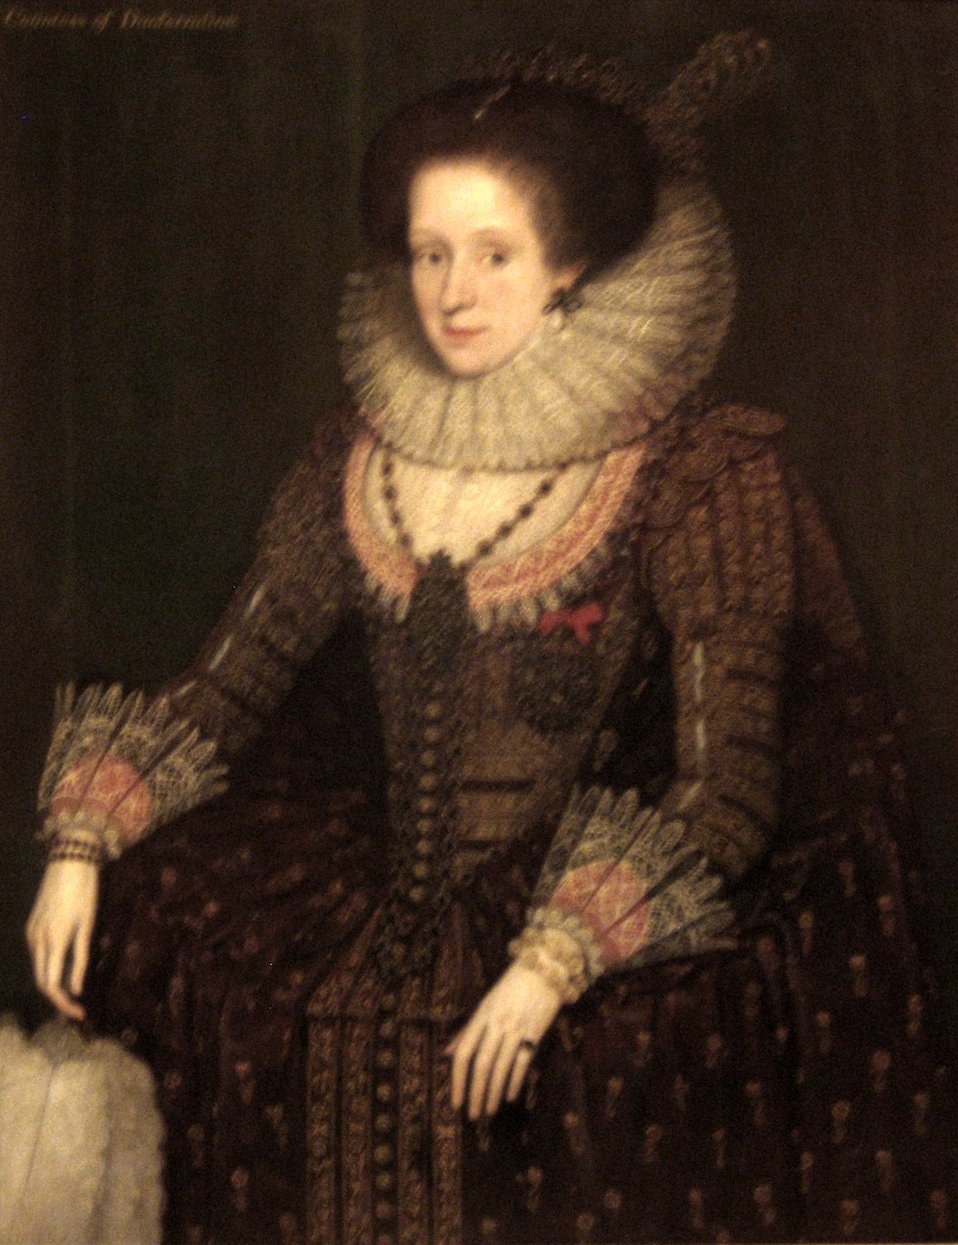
'Margaret Hay, Countess of Dunfermline', oil on canvas painting by Marcus Gheeraerts the Younger, Dunedin Public Art Gallery